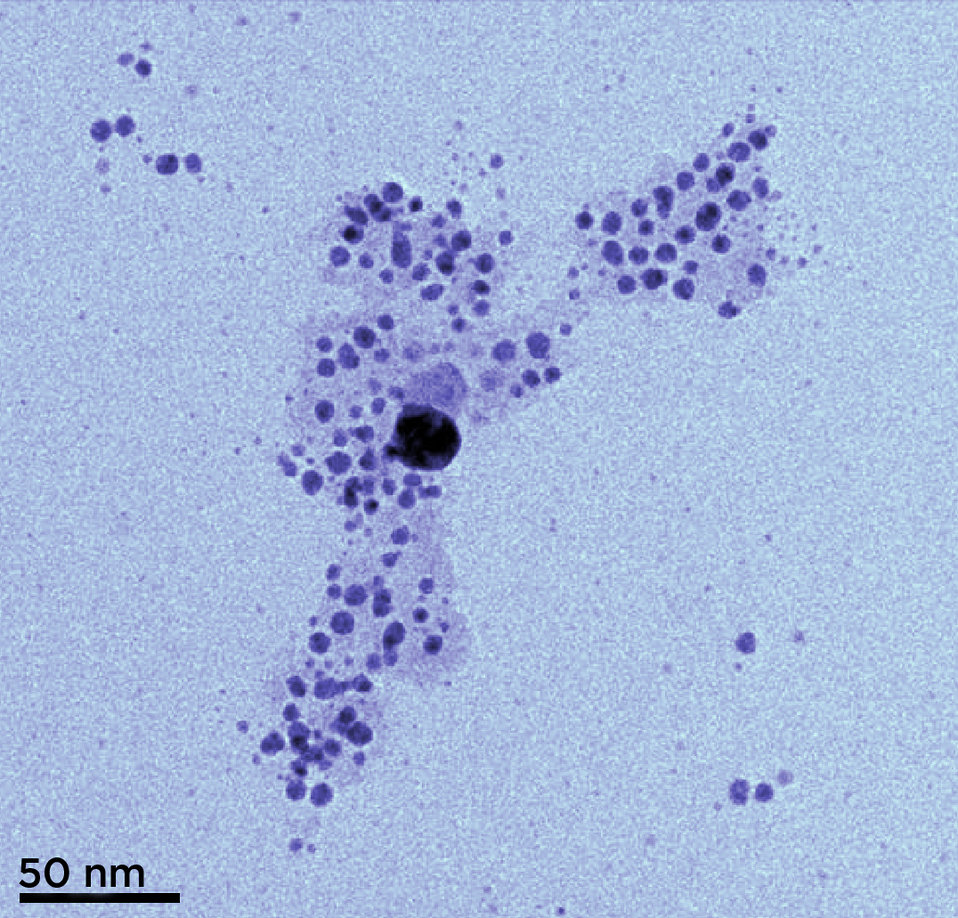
TEM; Silver Nanoparticles

Transmission electron microscopy (TEM) image of silver nanoparticles formed from silver ions in solution with humic acid. The acid tends to coat the nano particles (visible here as a pale cloud), keeping them in a colloidal suspension instead of clumping together. (Color added for clarity.)